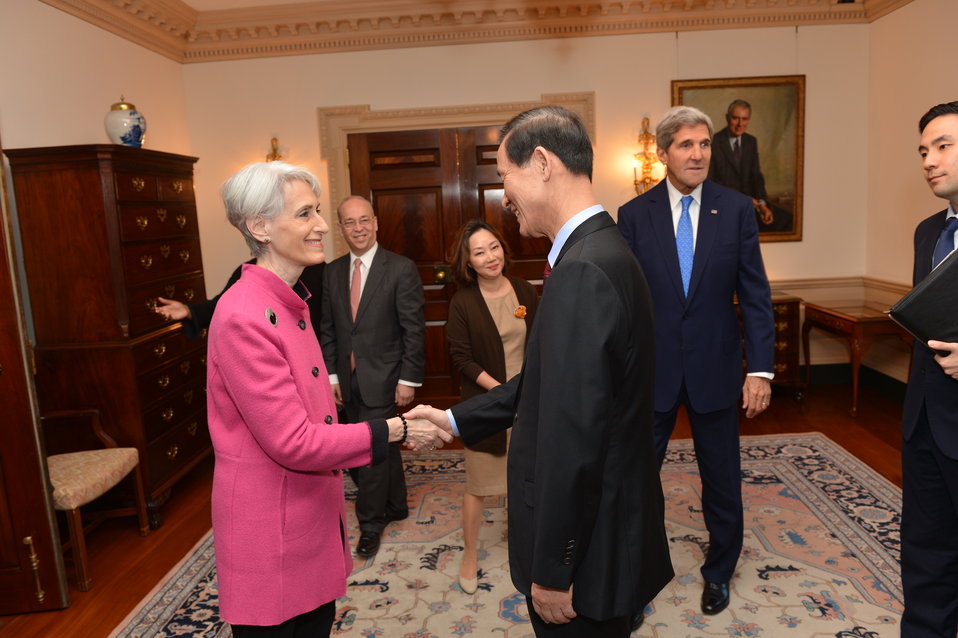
Under Secretary Sherman Greets Republic of Korea Director of National Security Kim Jang-soo

Under Secretary for Political Affairs Wendy Sherman greets Republic of Korea Director of National Security Kim Jang-soo before their meeting with U.S. Secretary of State John Kerry at the U.S. Department of State in Washington, D.C., on October 25, 2013.